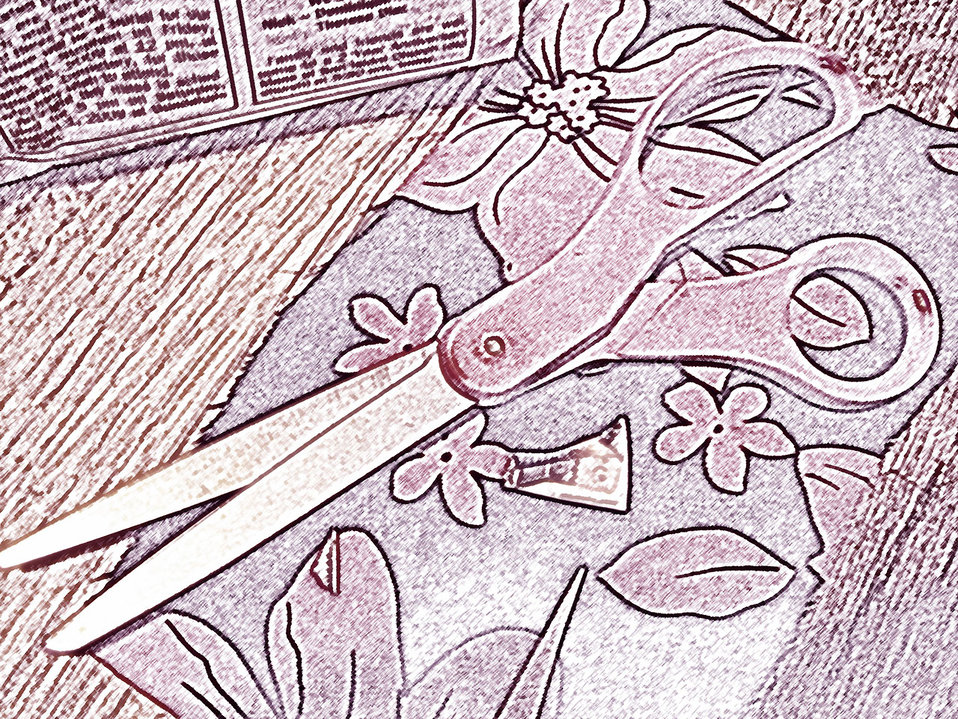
Arts and crafts

Newspaper patterns, cutting up fabric.